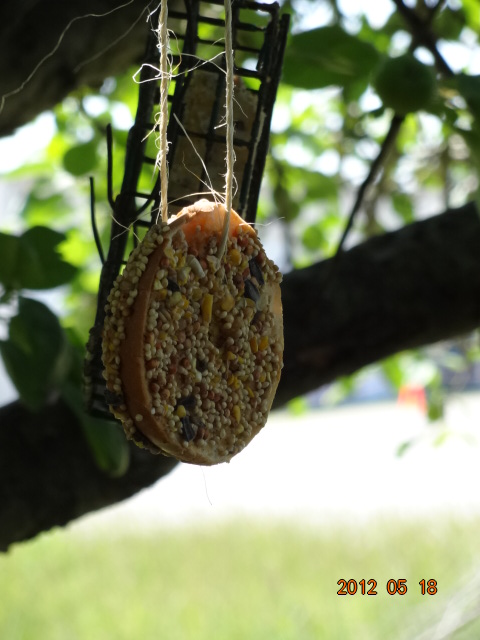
International Migratory Bird Day 2012

Marais des Cygnes National Wildlife Refuge